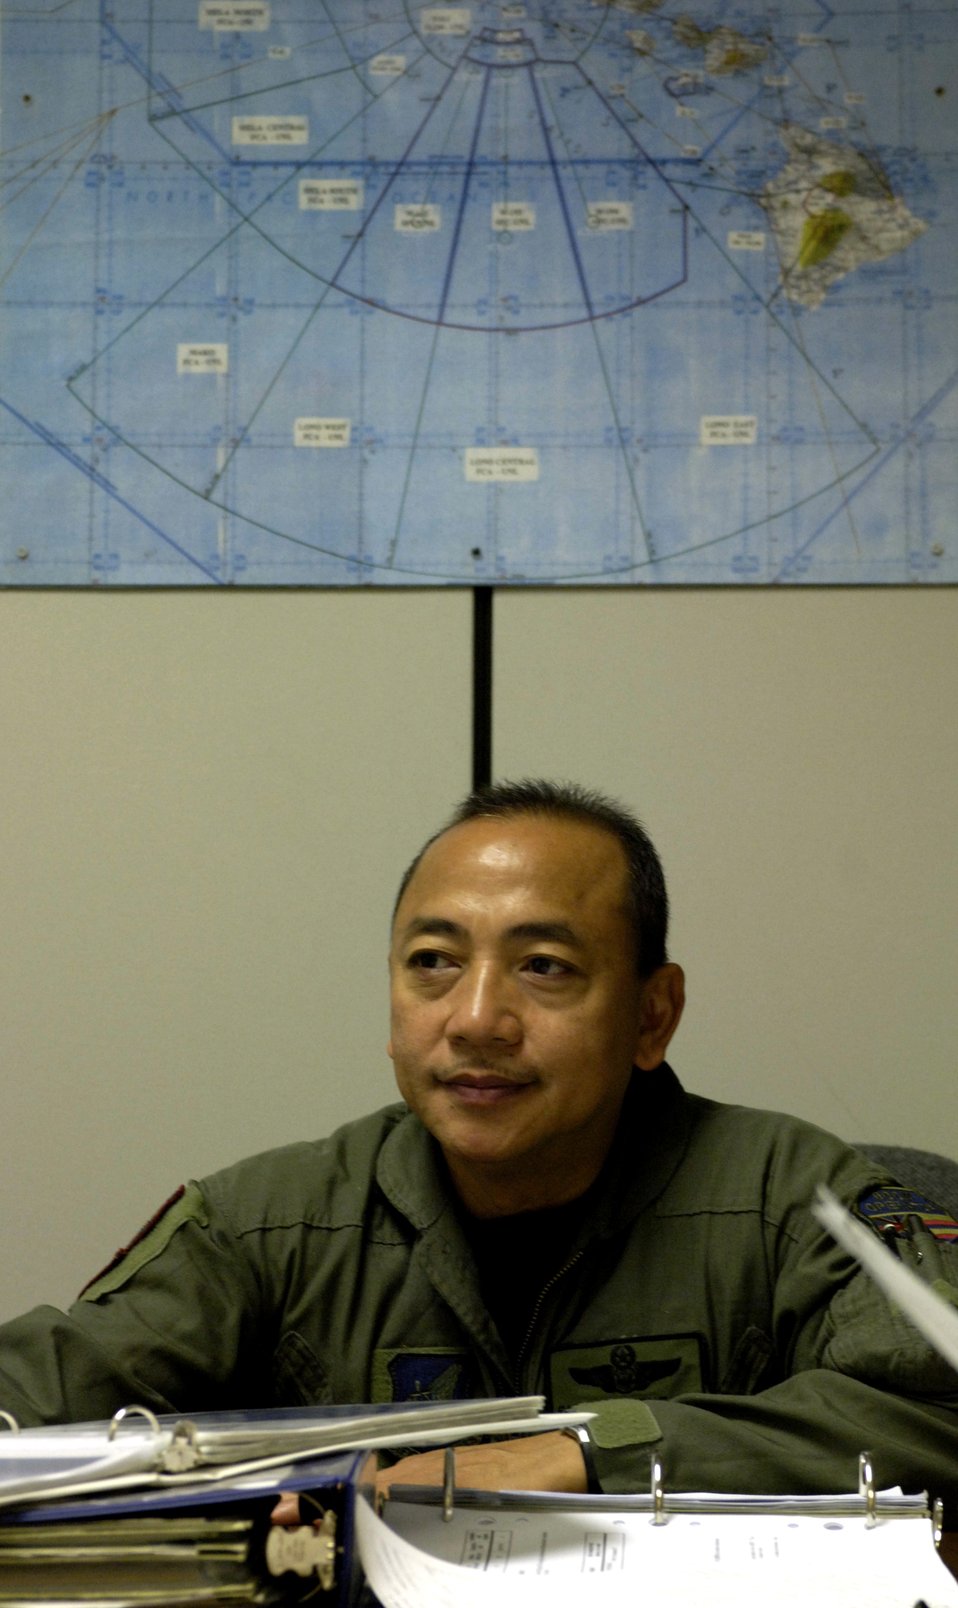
Boom operator

Senior Master Sgt. Steve Cid listen to a preflight crew briefing before flying an air refueling mission Thursday, April 20, 2006 at Hickam Air Force Base, Hawaii. Sergeant Cid is a boom operator with the Hawaii Air National Guard's 203rd Air Refueling Squadron.